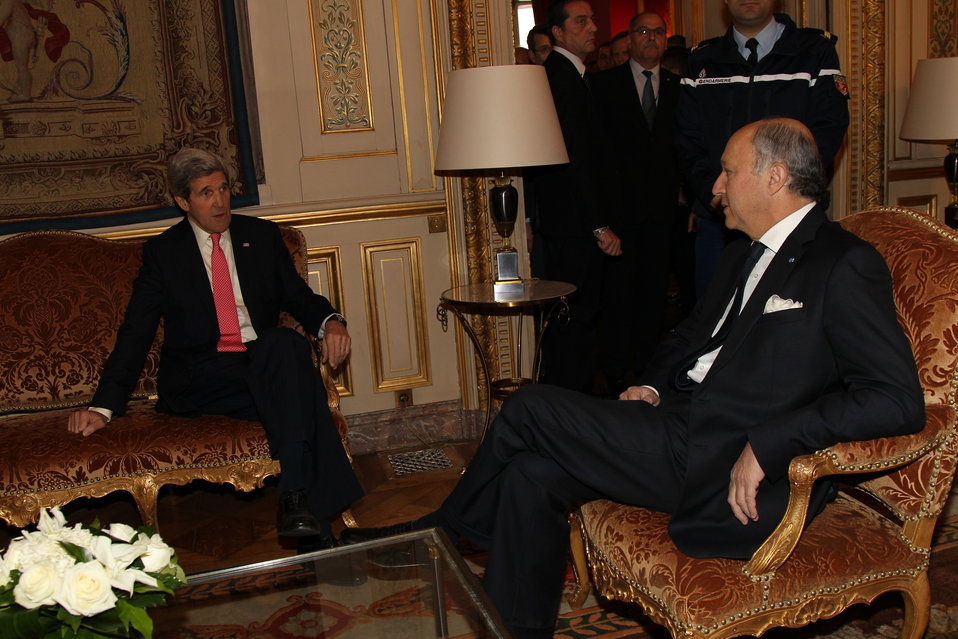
Secretary Kerry Meets With French Foreign Minister Fabius

U.S. Secretary of State John Kerry meets with French Foreign Minister Laurent Fabius in Paris, France on March 27, 2013.